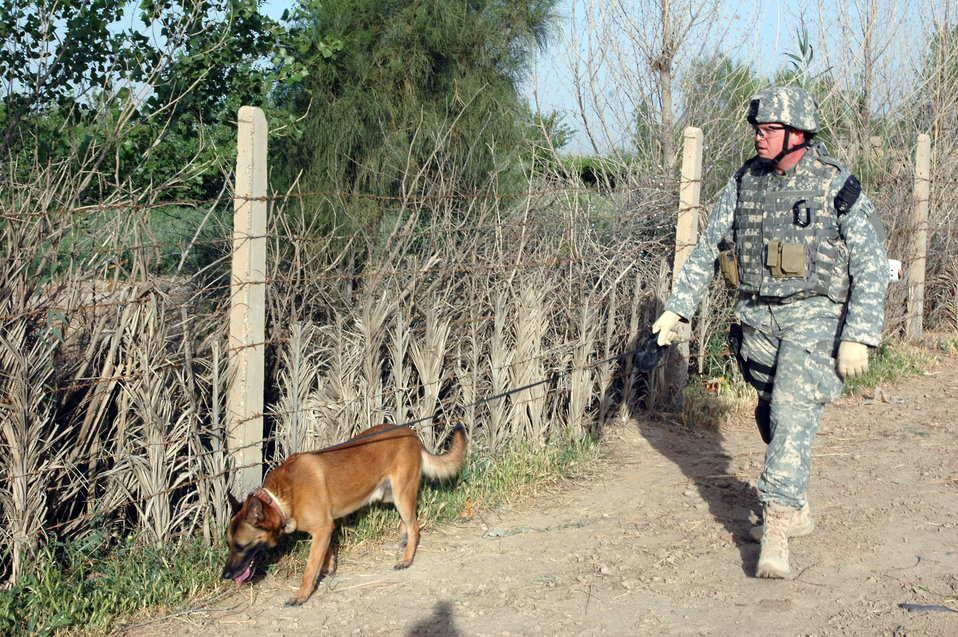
Working dogs bring bite to the fight

Staff Sgt. Dennis Browning, a military working dog handler, and King, an explosives and patrol attack dog, search an area during a clearing operation near Khan Bani Sa'ad, about 15 miles south of Baqouba, Iraq. Sergeant Browning is deployed from the 21st Security Forces Squadron at Peterson Air Force Base, Colo.